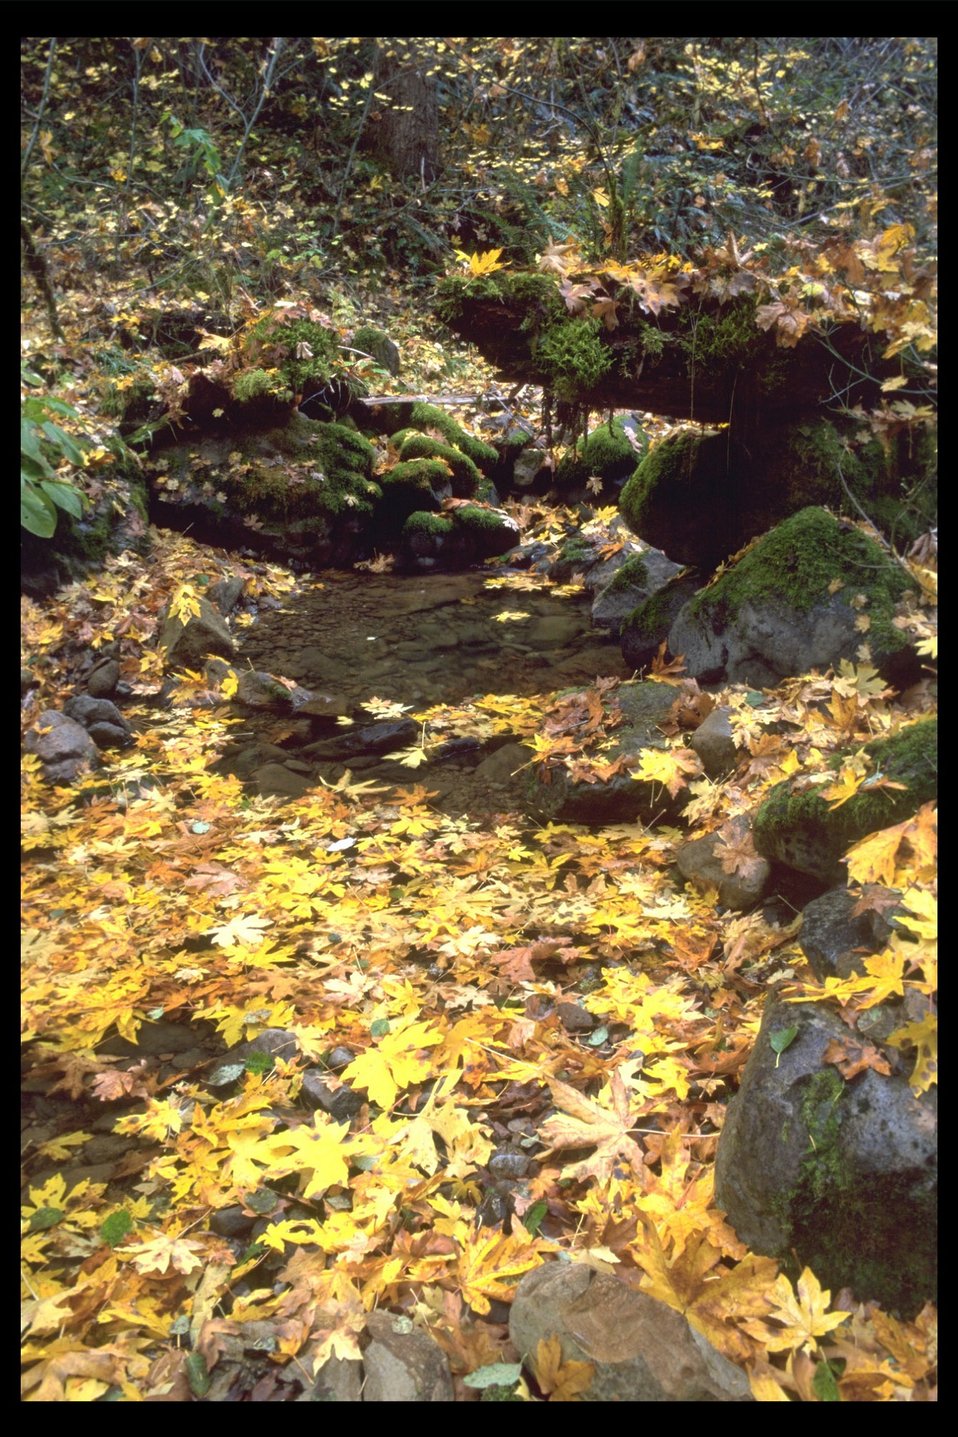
Pleasant Creek, east of Wimer.